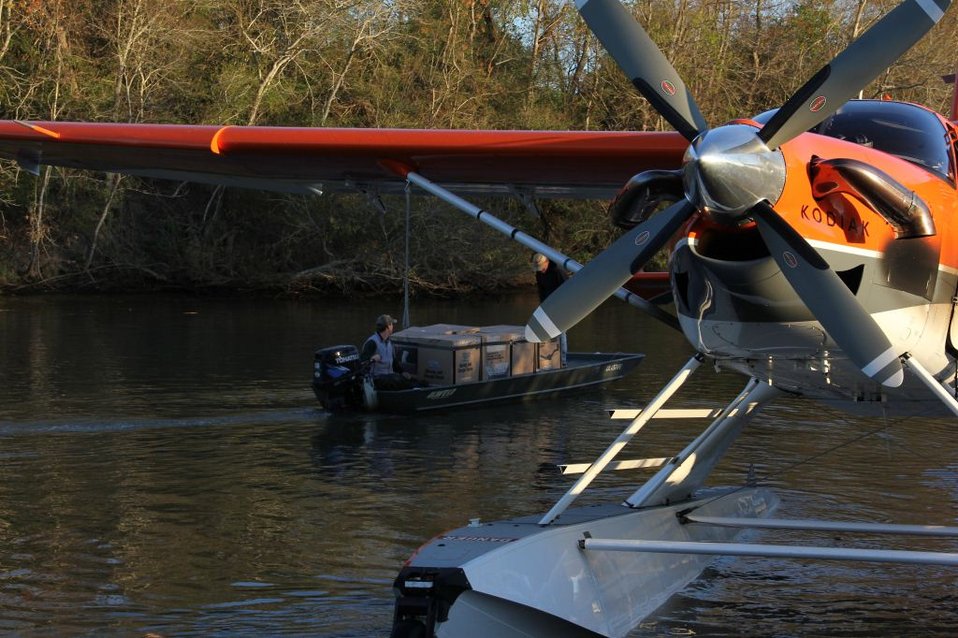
Transporting Whooping Cranes to White Lake Wetlands Conservation Area

Whooping cranes loaded on the boat and headed out to the pen site at White Lake Wetlands Conservation Area (WLWCA) in Louisiana.